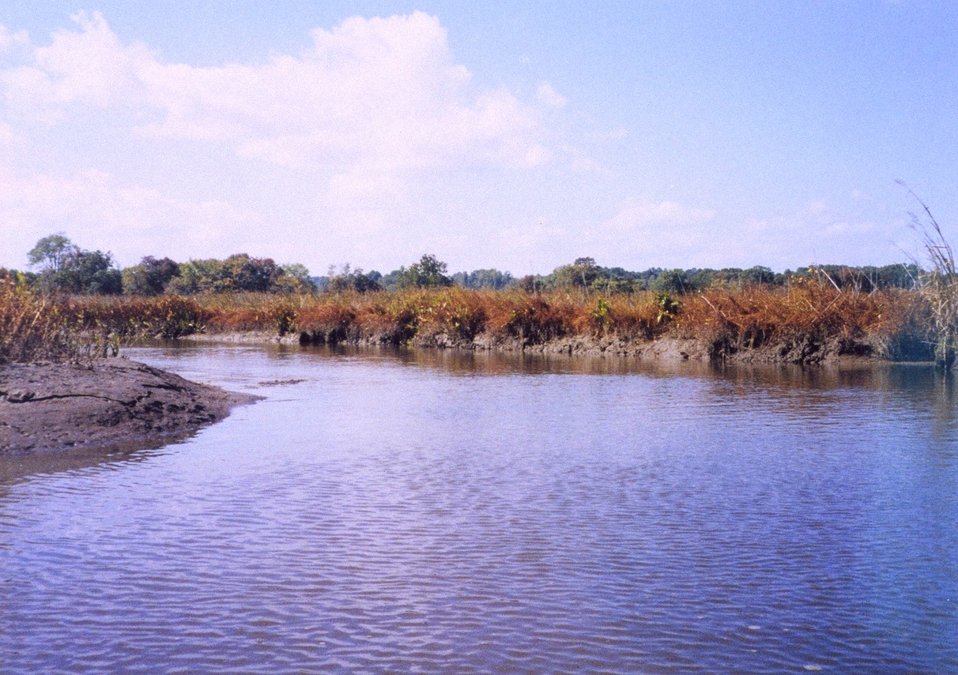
A Patuxent River marsh in the fall.